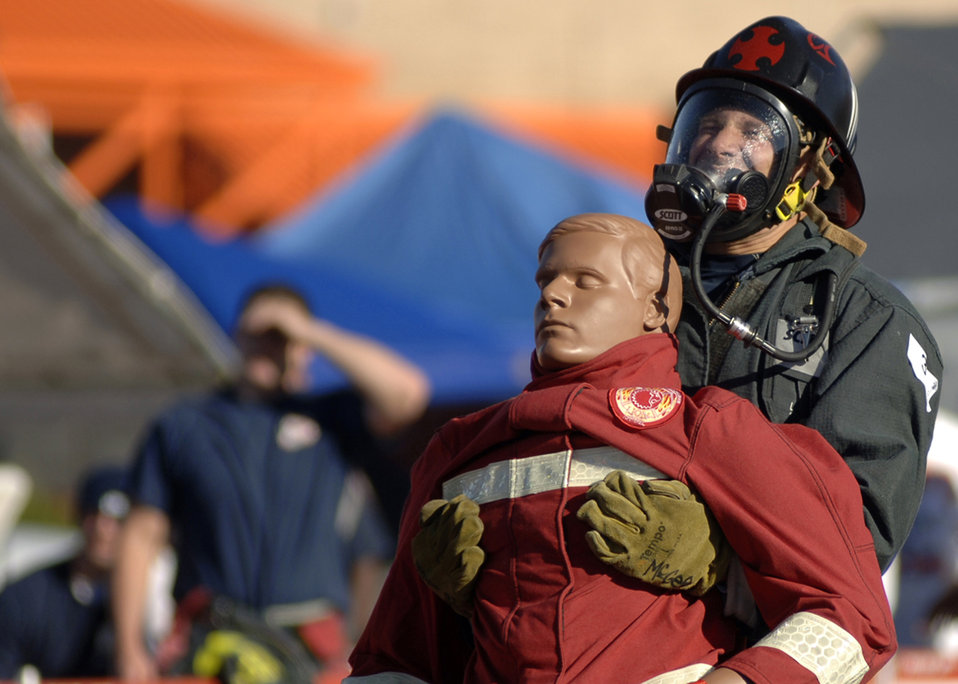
Dummy Obstacle

Cory McGee, Whiteman Air Force Base, Mo., carries a 170-pound dummy to finish the last part of the Firefighter Combat Competition obstacle course at Morrow, Ga., Oct. 13, 2006.